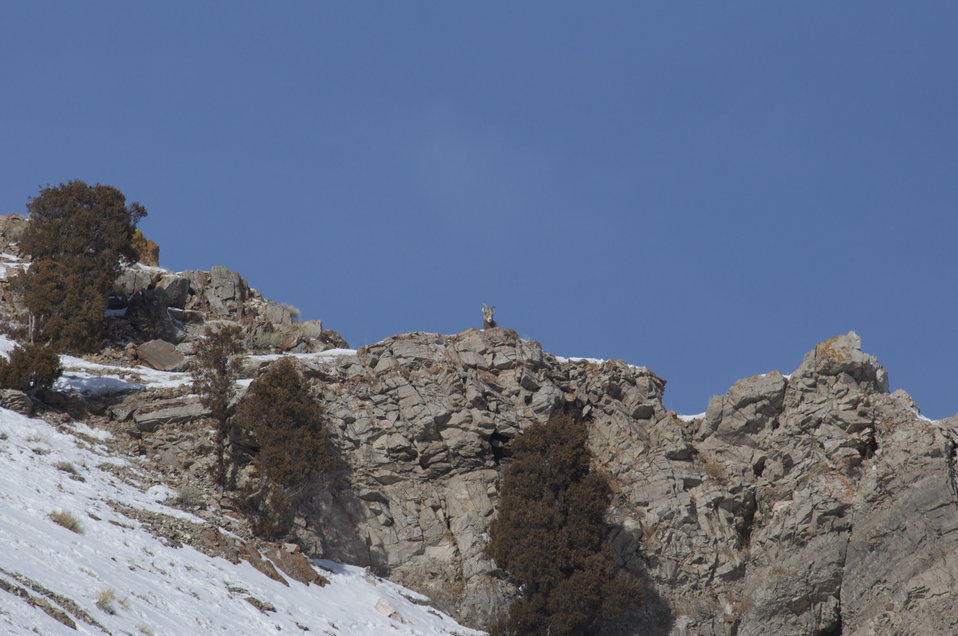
Keeping an Eye Out from Above

A bighorn sheep peers down from a rocky cliff along Miller Butte on the National Elk Refuge.